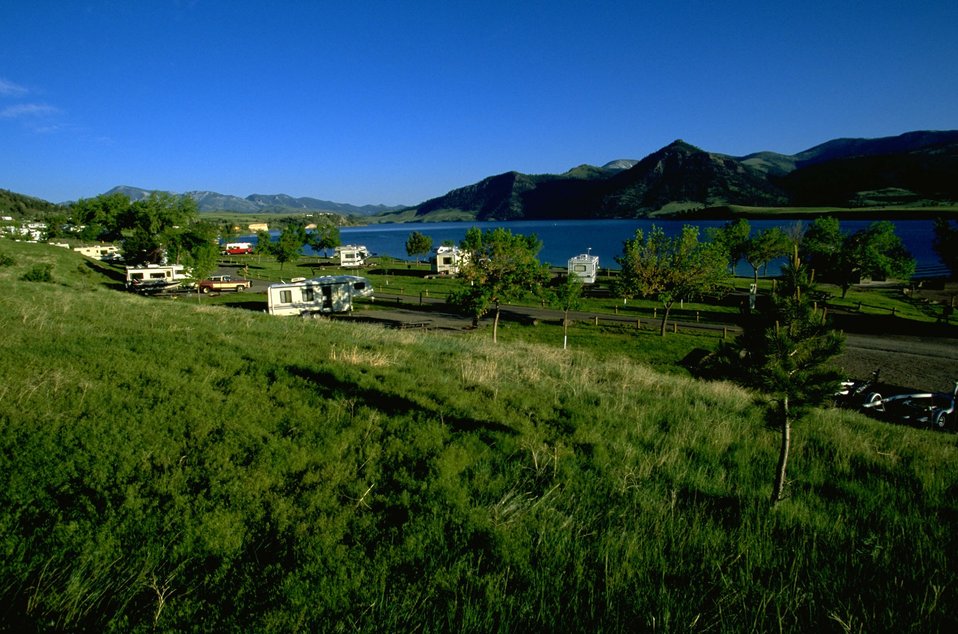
Holter Lake and campers surrounded by mountains